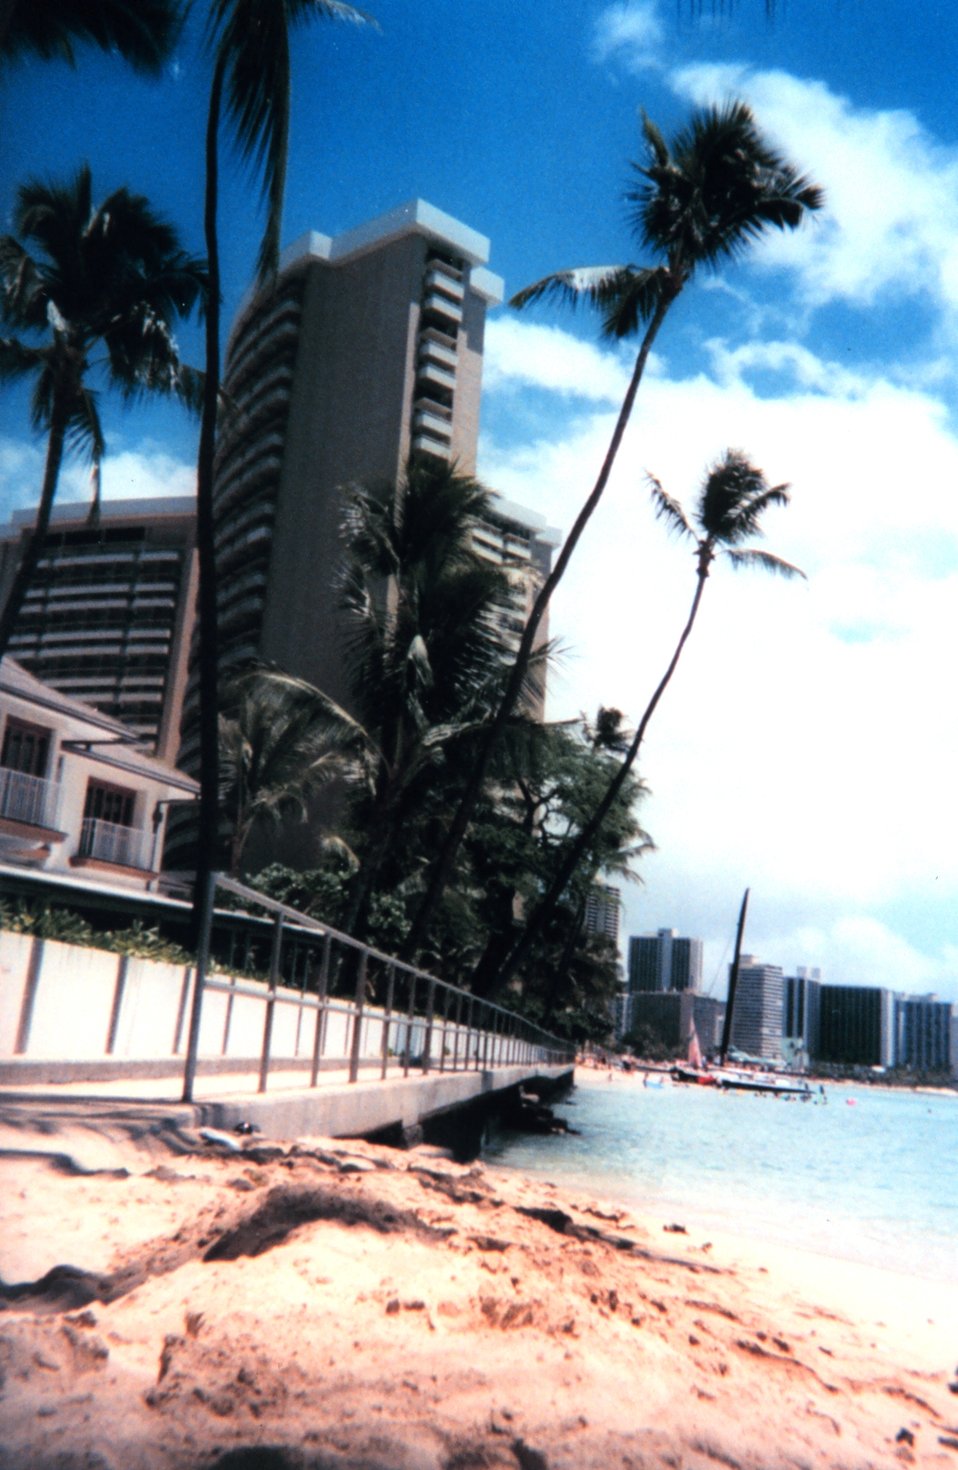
Hotels and palm trees at Waikiki.